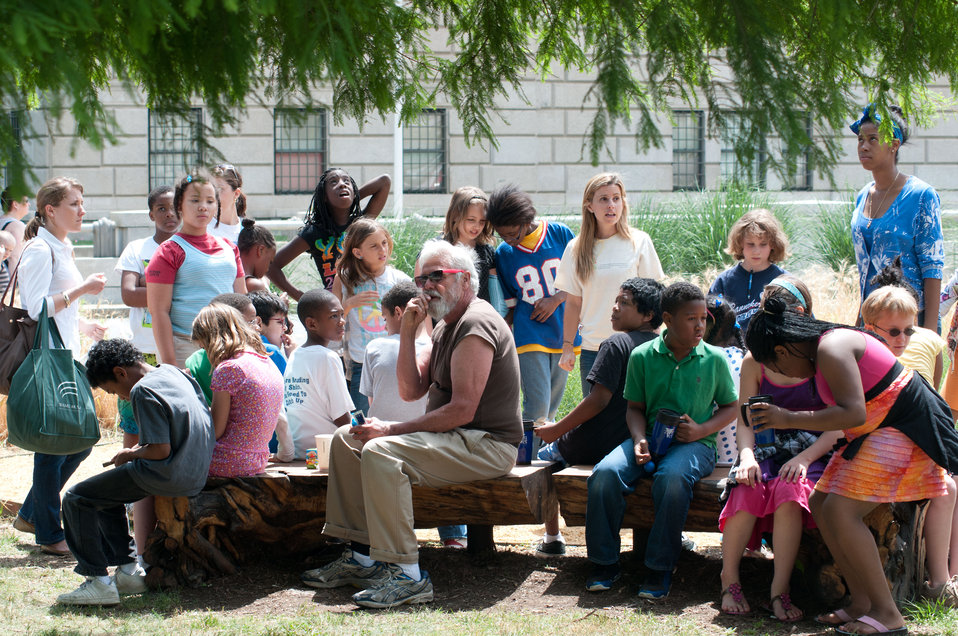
U.S. Department of Agriculture (USDA) Education Outreach Specialist Annie Ceccarini (center, light color t-shirt) teaches students from E.L. Haynes School in Washington, DC about the reused tree stump that some of them are sitting on just one of many features in the People’s Garden, during the opening day of the USDA Farmers Market and the official kick off of the People's Garden Friday activities on Friday, June 3, 2011 in Washington, DC. More than 200 children participated in activities at several learning stations teaching them how to make planter pots out of household trash items; make salsa; experience the taste and smell of herbs; then search for those plants in the bed of Truck Farm, a mobile garden; and have a guided tour of the People’s Garden, and learn the importance of worms in a garden. For many, it was the first time to eat a pea from a pod, plucked from a vine. The adjacent USDA Farmers Market is located at the corner of 12th Street and Independence Avenue and will be open every Friday from 10:00 a.m. - 2:00 p.m. through November 18th. Special complimentary events will be happening every Friday at the market and at the People's Garden all season.